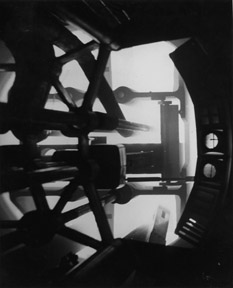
Core of the Low Intensity Test Reactor at Oak Ridge National Laboratory. c. 1961